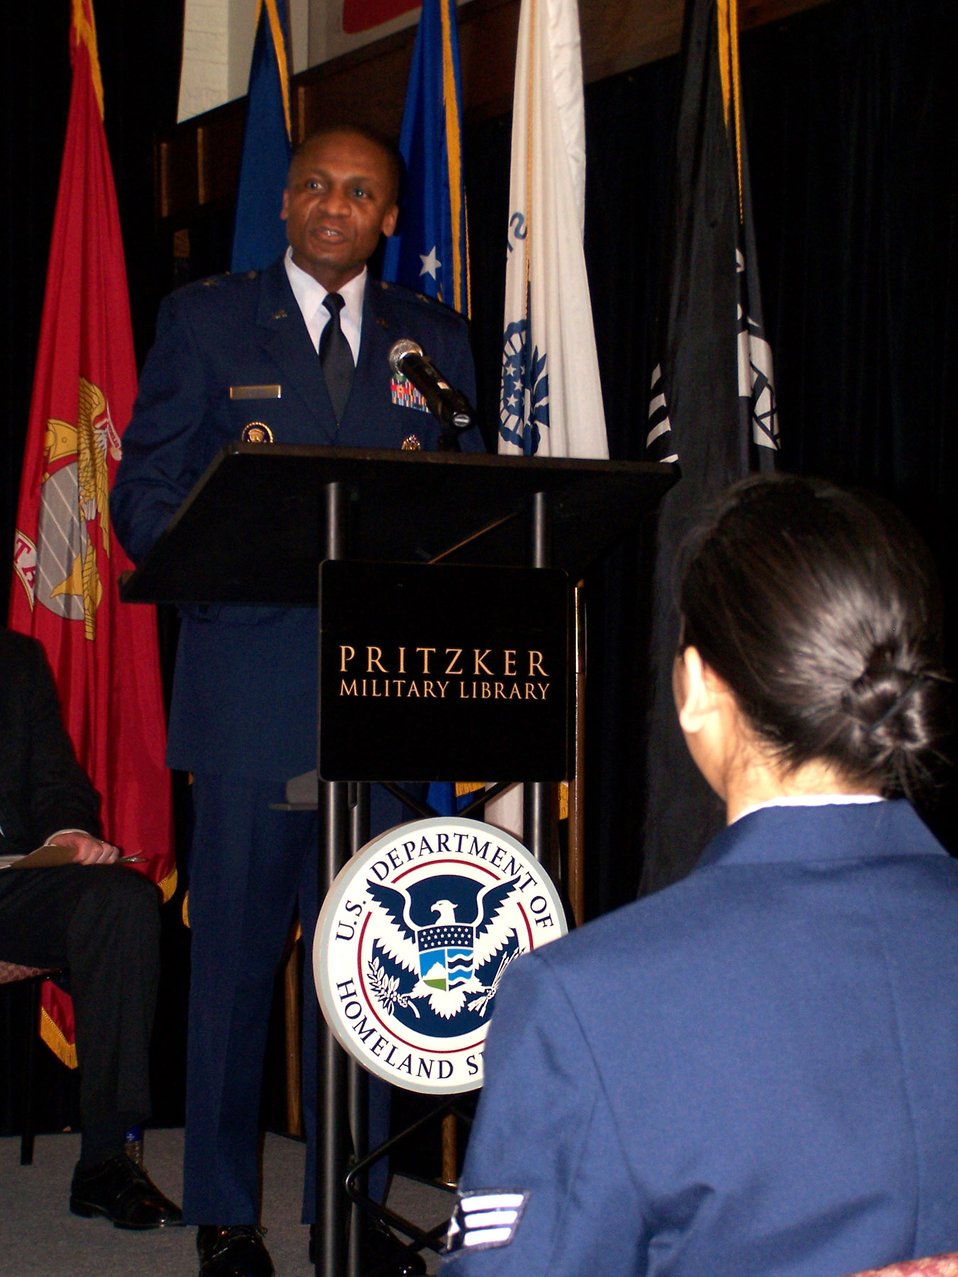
30 servicemembers become citizens

Brig. Gen. Darren McDew, director of public affairs, Office of the Secretary of the Air Force, was the keynote speaker for the U.S. Citizenship and Immigration Services Naturalization ceremony at the Pritzker Military Library in Chicago. The only Air Force member among the 30 new citizens was Senior Airman Katherine Collantes. She was assigned to the 434th Air Refueling Wing, Grissom Air Reserve Base, Ind.